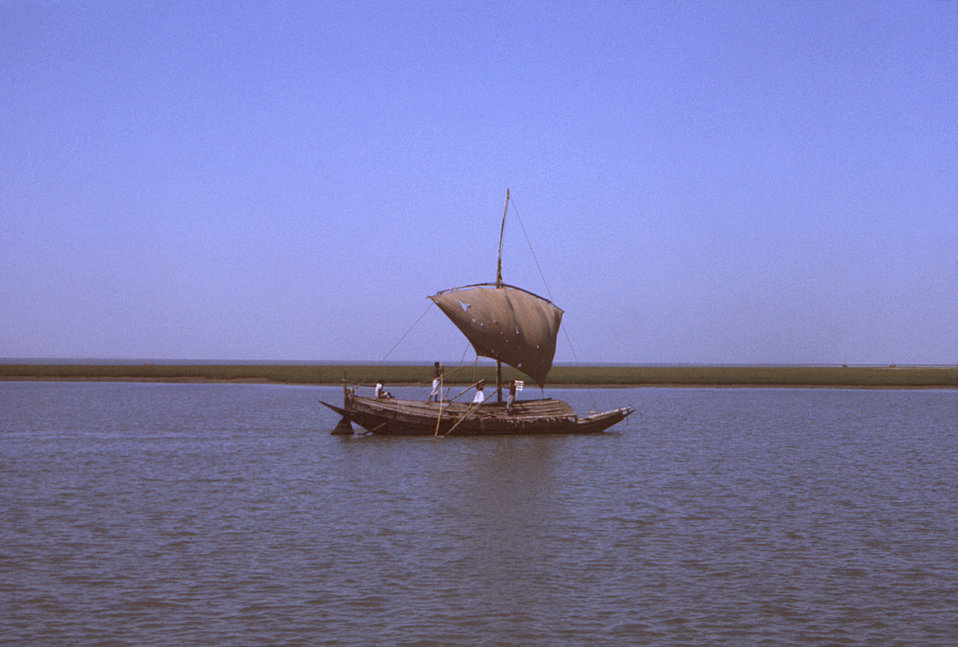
Photographed sometime in the early 1970s, during the worldwide smallpox eradication campaign, this image depicted a sail-driven boat traveling along an unidentified river in the country of Bangladesh.